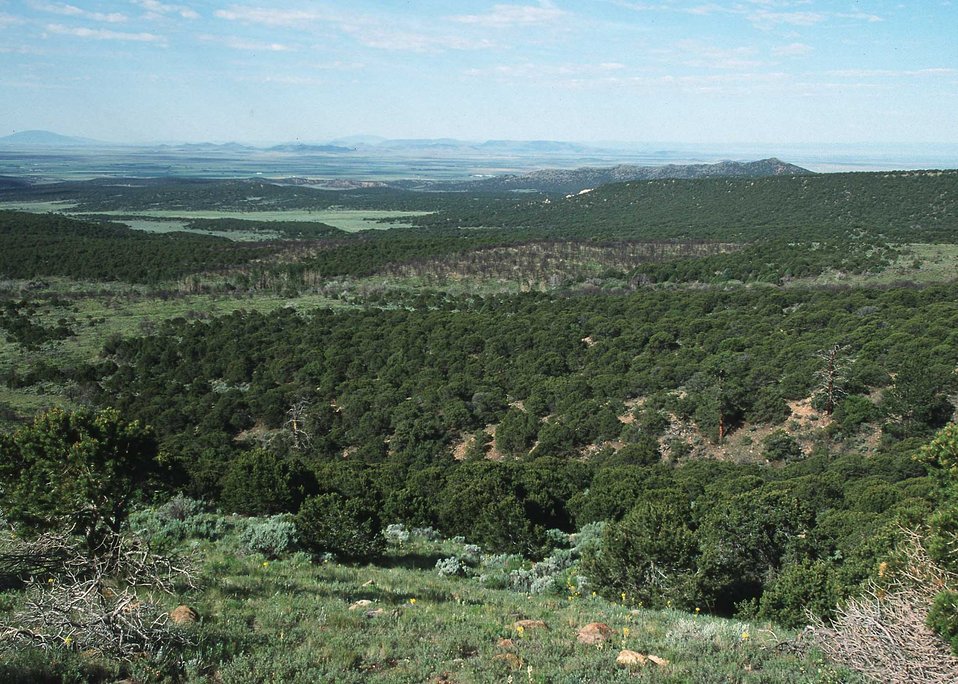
Pinyon/Juniper/ Sage Brush Communities, CO.